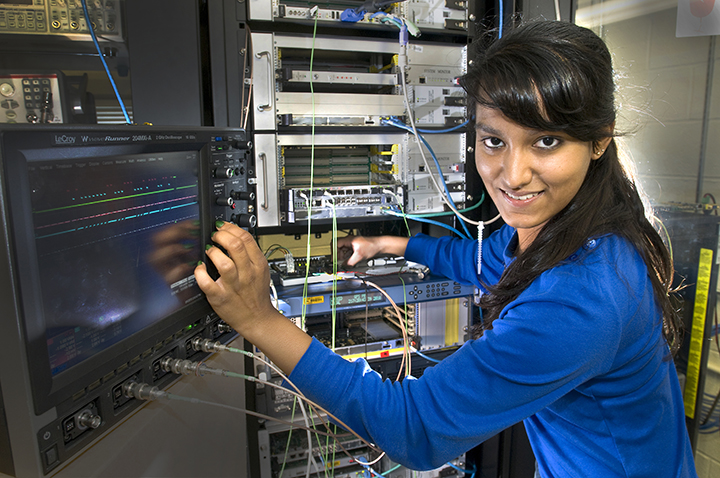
Students get hands-on research experience at Brookhaven National Laboratory's National Synchrotron Light Source.